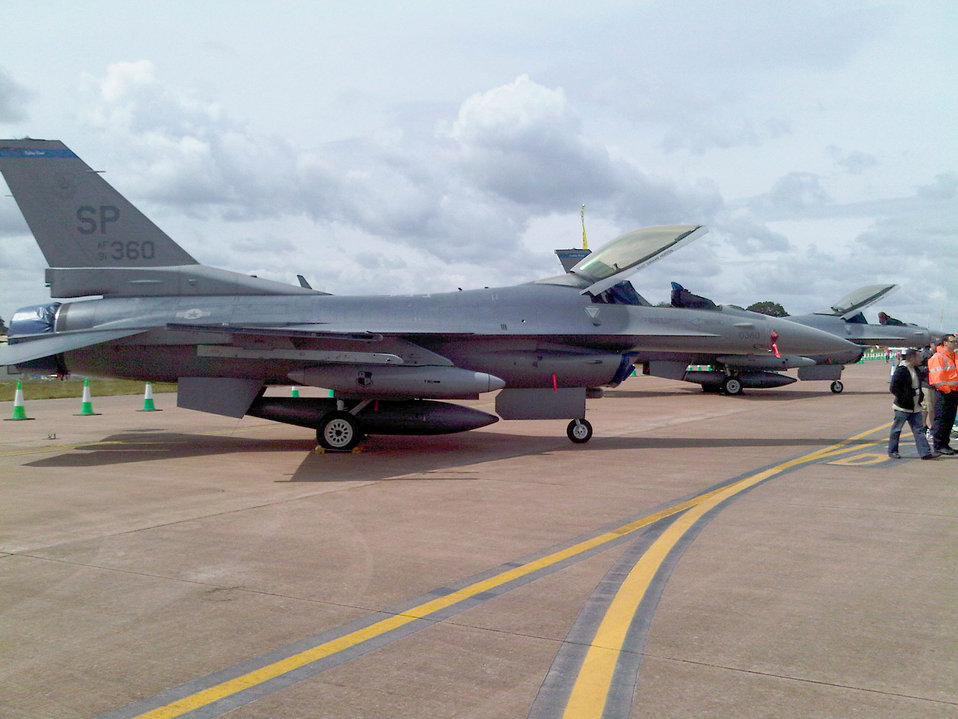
'Royal International Air Tattoo'

An F-16 Fighting Falcon is on display during the Royal International Air Tattoo, July 17, 2010, at Royal Air Force Fairford, England. The air show has gained the reputation as one of the country's top outdoor family events. The F-16 is based out of Spangdahlem Air Base, Germany.